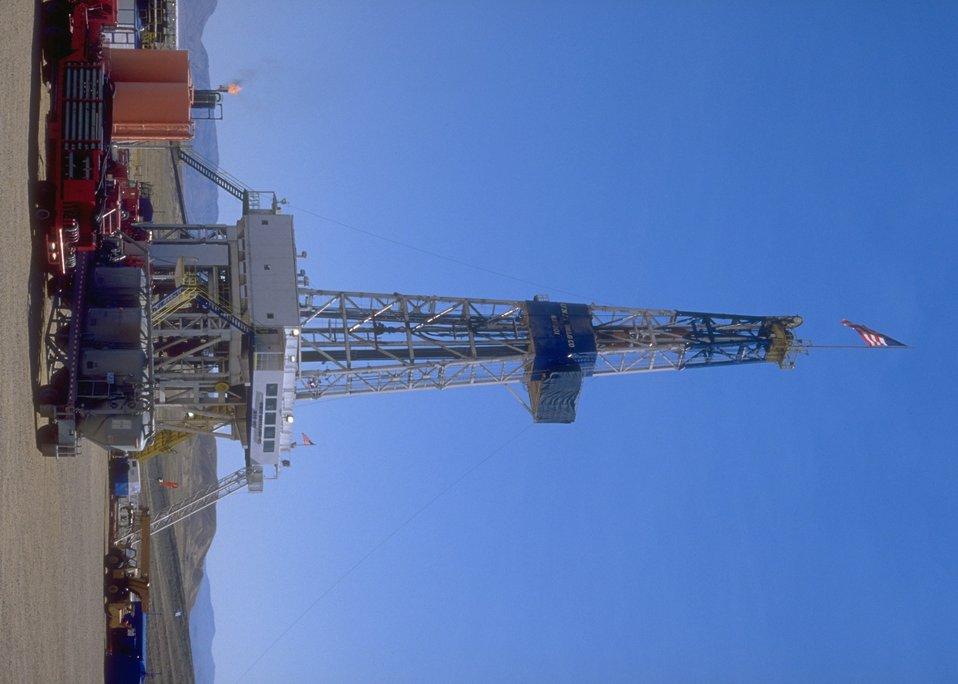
Burlington Northern deep well rig, Casper Field Office.